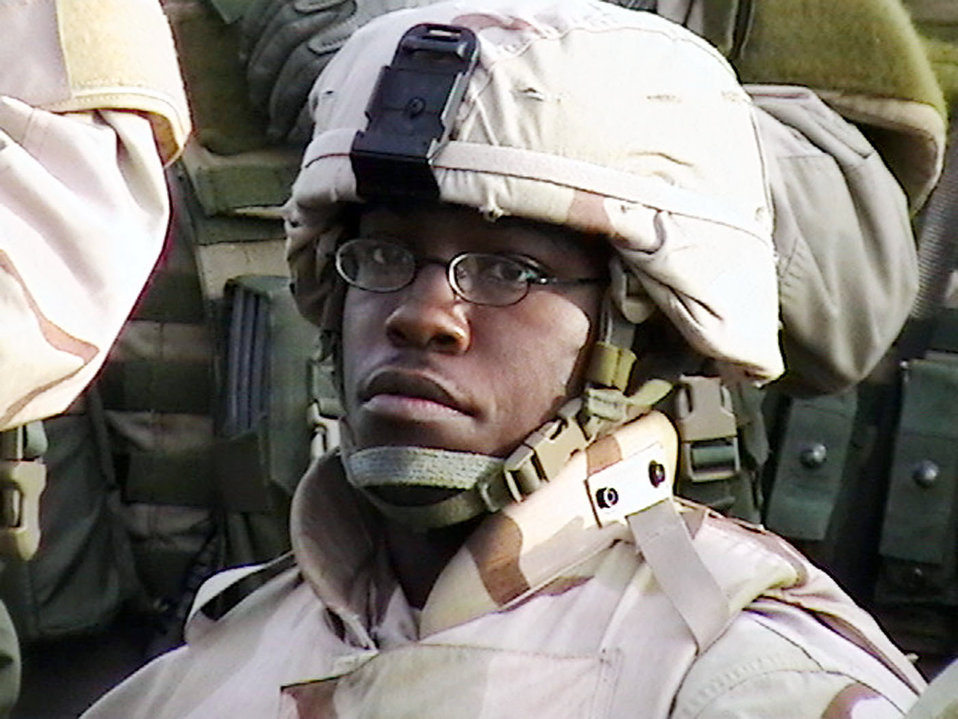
Airman killed in support of OIF

Airman 1st Class Jason D. Nathan died in Iraq June 23 from wounds suffered when an improvised explosive device detonated near his vehicle while on patrol. Airman Nathan was deployed to Iraq from the 48th Security Forces Squadron, Royal Air Force Lakenheath, England.